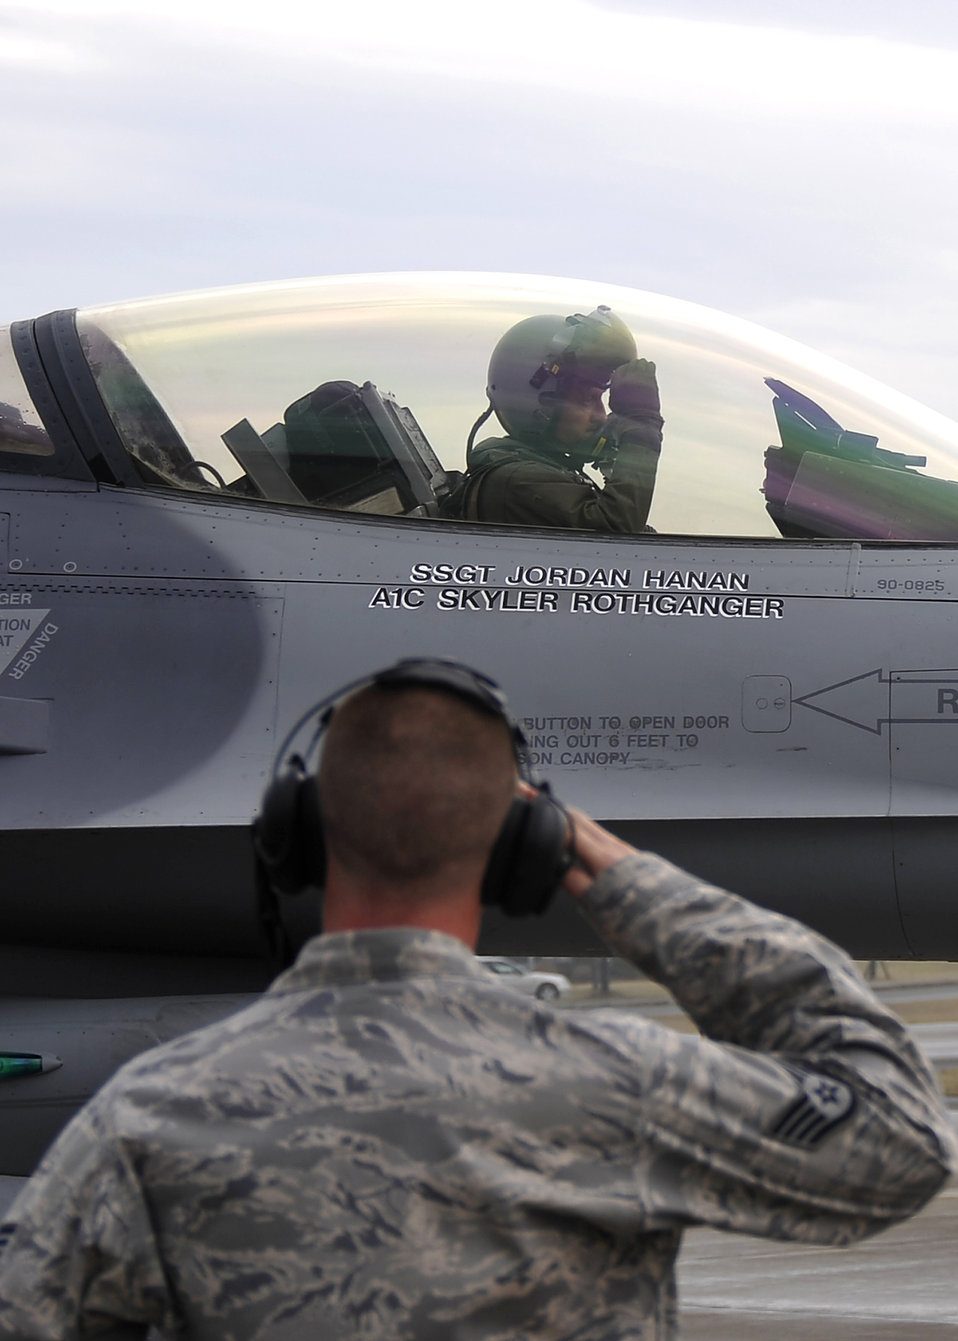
Fighting Samurai deploy to Korea

MISAWA AIR BASE, Japan -- Staff Sgt. Gregory Meyers, 14th Aircraft Maintenance Unit crew chief, salutes Lt. Col. Aaron Steffens, 14th Fighter Squadron commander, after completing the pre-flight inspection May 7. Sixteen F-16 Fighting Falcons from the 14th FS deployed to the Republic of Korea in an effort to maintain regional stability.